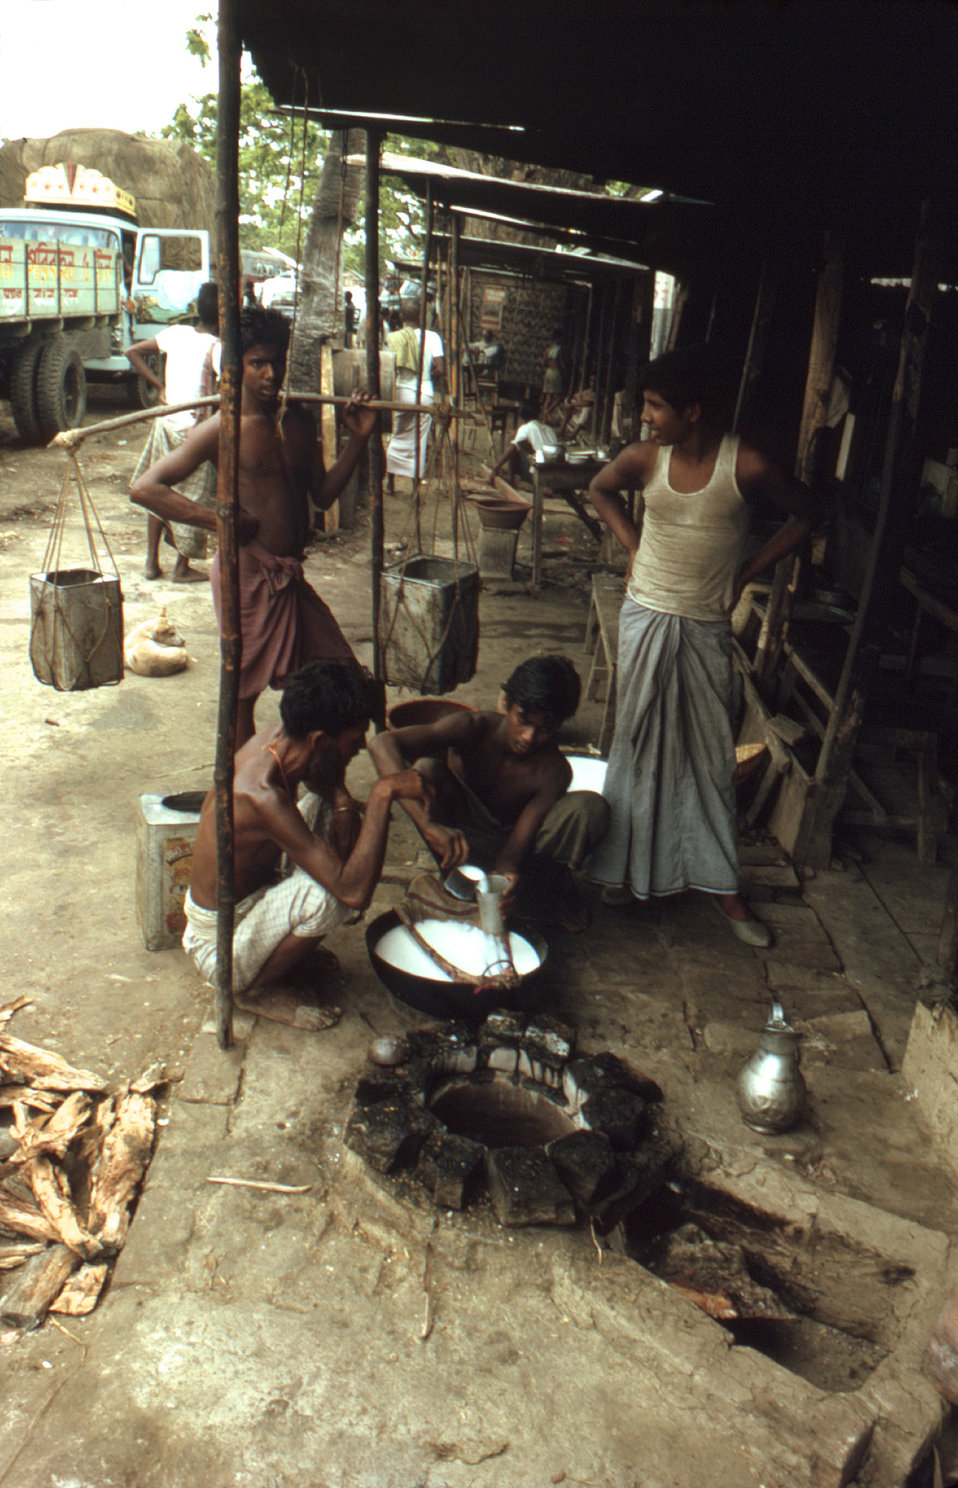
This 1974 image was photographed during the world wide smallpox eradication efforts in the country of Bangladesh. In this particular scene, a number of Bengali men were in the process of what appeared to be cooking some food beneath an awning shelter.